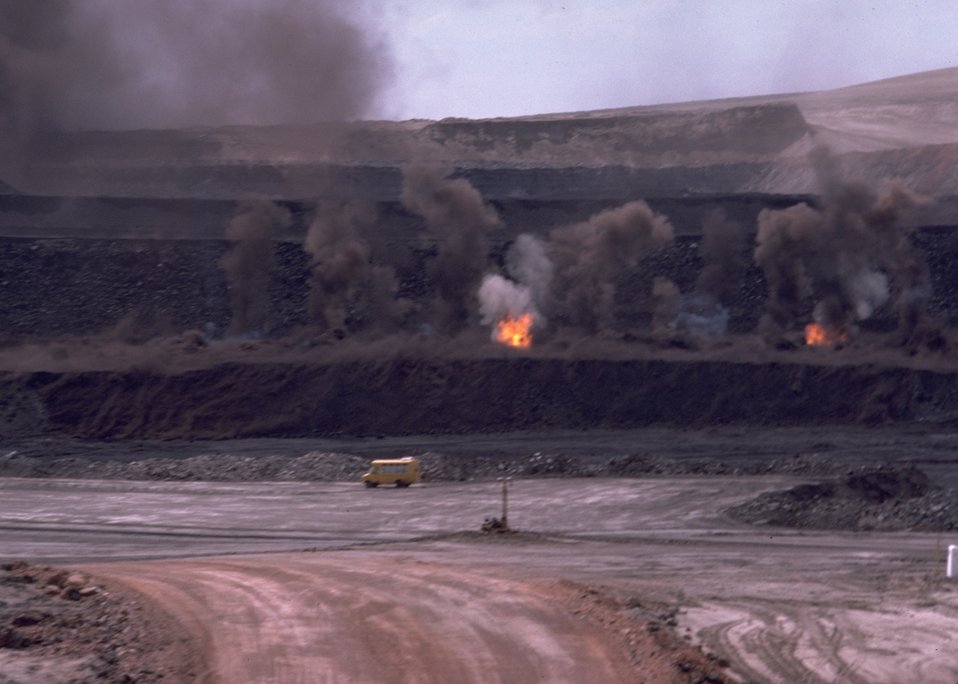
Coal bed methane development.